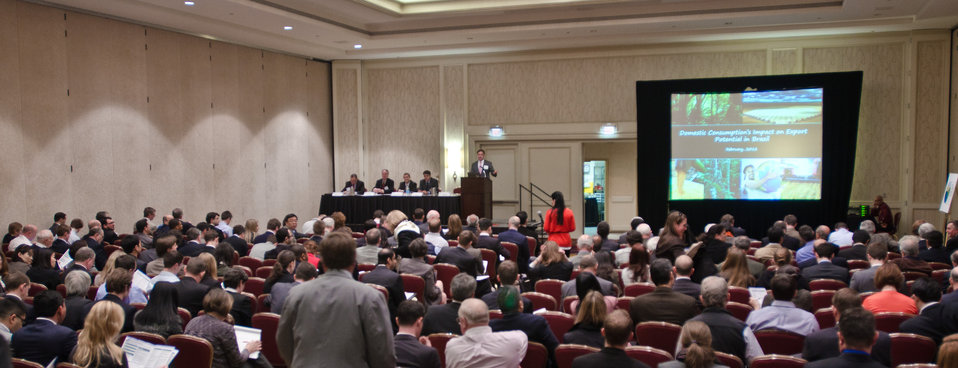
Agriculture Global Policy Analysis Division Director Mike Dwyer moderated the Food Prices & Farm Income session on “Export Opportunities and Competition in Brazil, Russia, India, and China (BRIC) Countries,” during the 2012 Agricultural Outlook Forum, “Moving Agriculture Forward, Growing, Innovating and Celebrating 150 Years” held at the Crystal Gateway Marriott Hotel in Arlington, Virginia, on Thursday, February 23, 2012. This year’s forum coincides with the 150th anniversary of the Department of Agriculture addressing economics, marketing, research, food safety, nutrition, conservation, rural development, alternative energy, trade and many other agricultural issues.